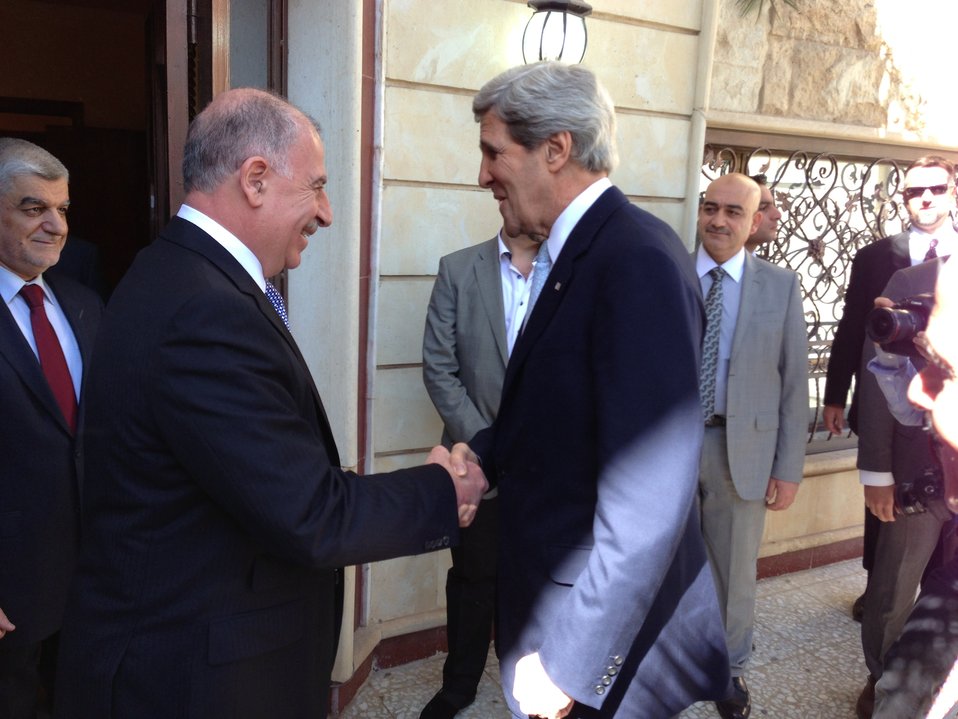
Secretary Kerry Meets Iraqi Council Speaker al-Nujayfi

U.S. Secretary of State John Kerry greets Iraqi Council of Representatives Speaker Usama al-Nujayfi in Baghdad, Iraq on March 24, 2013.